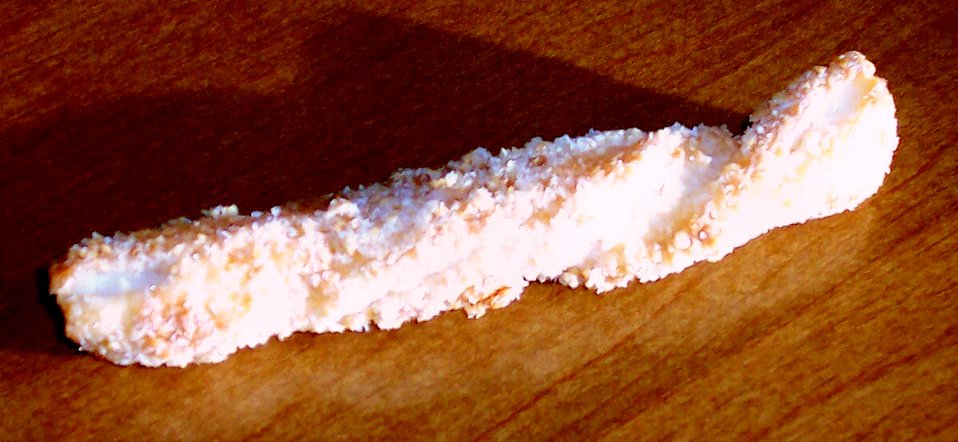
Sacristan is also a name for a twisted cookie made from puff pastry, sugar, and sometimes almonds. Taken by user Rbedford on February 9th, 2007. Baked by the author in the pastry kitchen at Schoolcraft Community College in Livonia, Michigan.